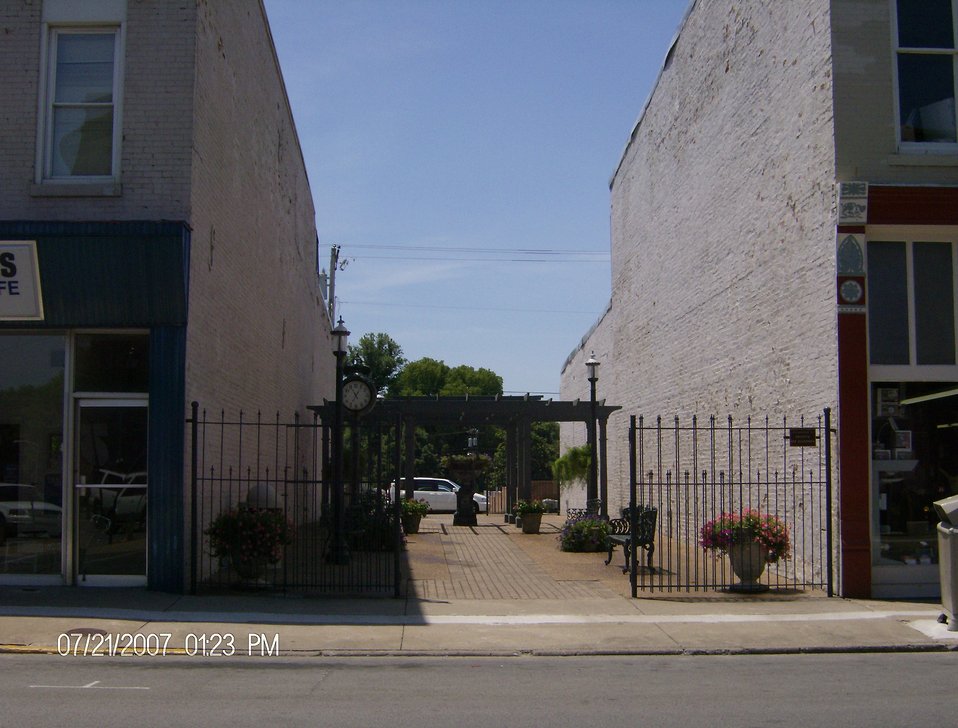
This is the former location of First Bank and Trust Company that was constructed in 1884. The building burned in 1988 and became Olszewska Park 1992. The location remains on the National Register of Historic Places.